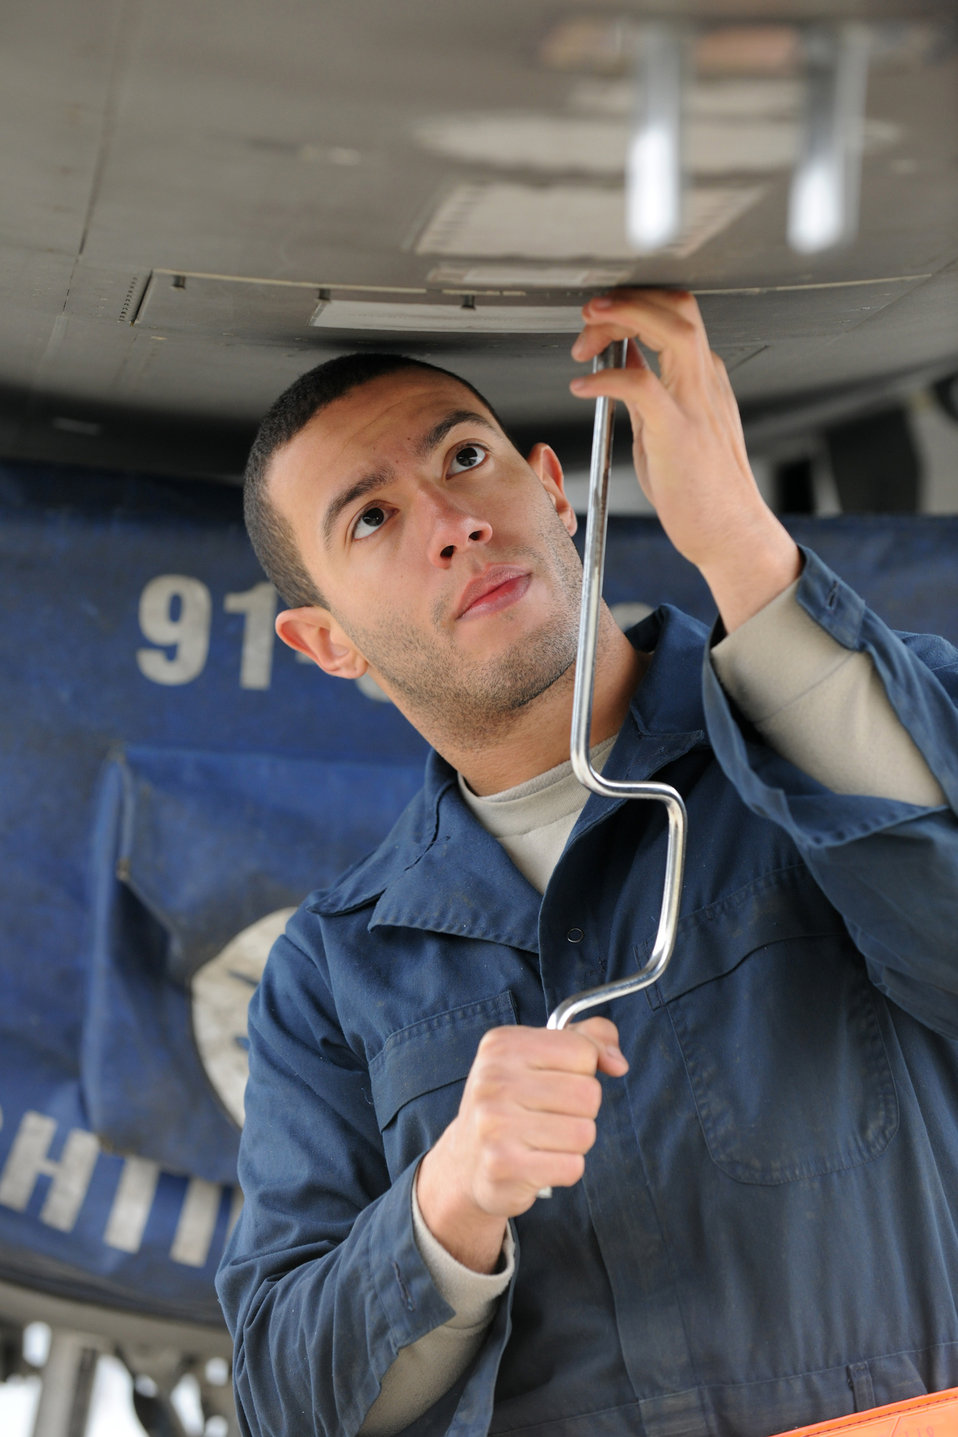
Operation Odyssey Dawn

SPANGDAHLEM AIR BASE, Germany ? A 52nd Component Maintenance Squadron Airman prepares an F-16 Fighting Falcon from the 480th Fighter Squadron for take-off from Spangdahlem Air Base in support of Operation Odyssey Dawn March 17. Joint Task Force Odyssey Dawn is the U.S. Africa Command task force established to provide operational and tactical command and control of U.S. military forces supporting the international response to the unrest in Libya and enforcement of United Nations Security Council Resolution (UNSCR) 1973. UNSCR 1973 authorizes all necessary measures to protect civilians in Libya under threat of attack by Qadhafi regime forces. JTF Odyssey Dawn is commanded by U.S. Navy Admiral Samuel J. Locklear, III.